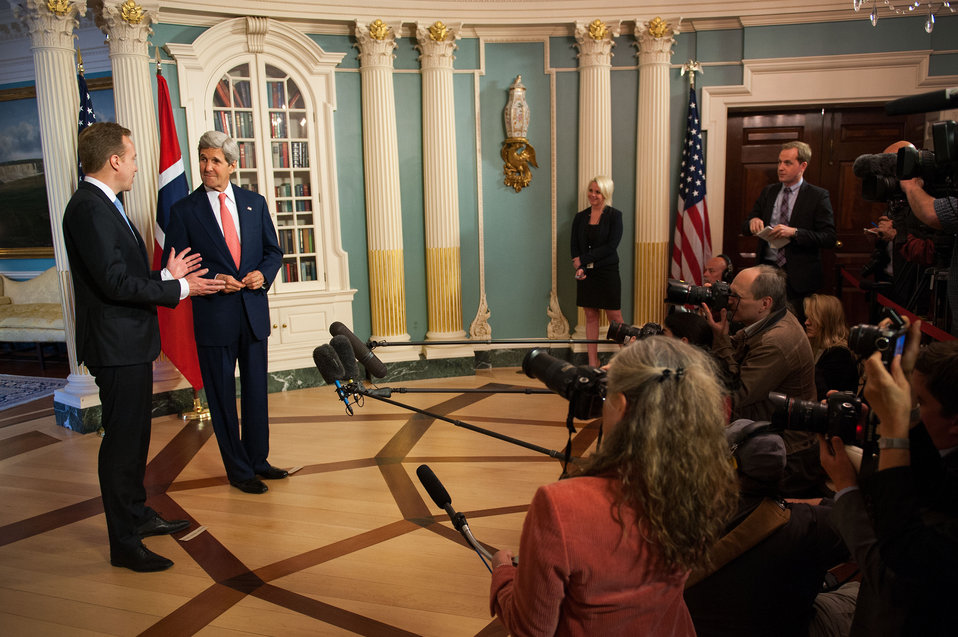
Secretary Kerry and Norwegian Foreign Minister Brende Address Reporters

U.S. Secretary of State John Kerry and Norwegian Foreign Minister Borge Brende address reporters after their bilateral meeting at the U.S. Department of State in Washington, D.C., on April 24, 2014.